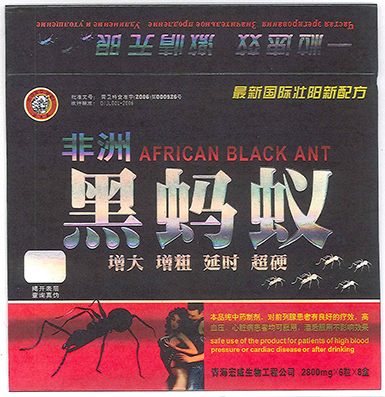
RECALLED – Dietary Supplement

April 1, 2014 – Product Recall – Nova Products, Inc. Issues Voluntary Nationwide Recall of Dietary Supplements with Undeclared Active Pharmaceutical Ingredients.